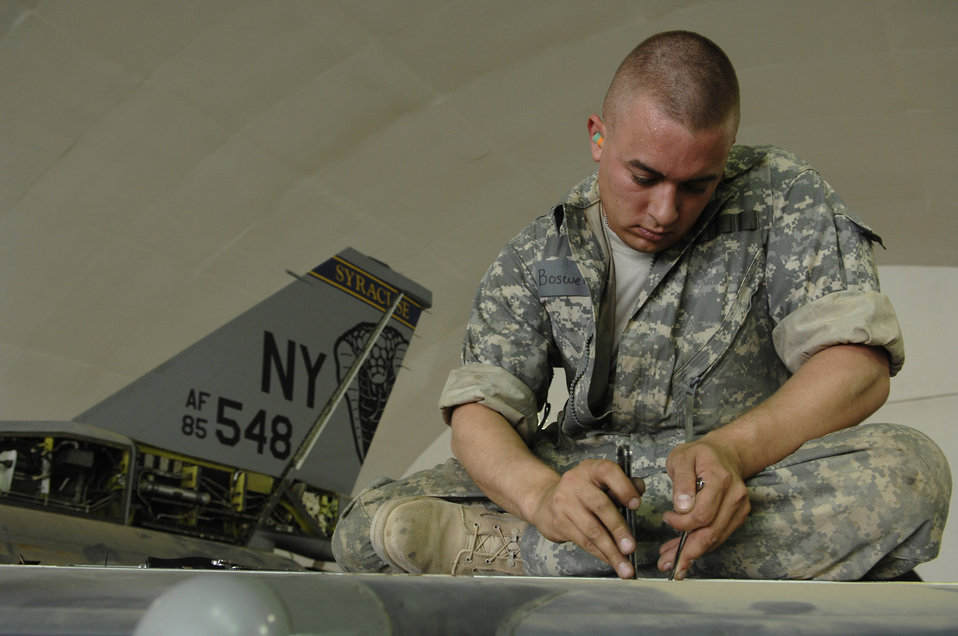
Just a phase

Airman 1st Class Bryan Boswell reinstalls an actuator for the leading edge flap test of an F-16 Fighting Falcon during a phase inspection June 18 at Joint Base Balad, Iraq. The leading edge flap creates a cup-like channel of air under the wings, which allows the aircraft to move at slower air speeds. Airman Boswell is a 332nd Expeditionary Aircraft Maintenance Squadron crew chief deployed from Nellis Air Force Base, Nev.